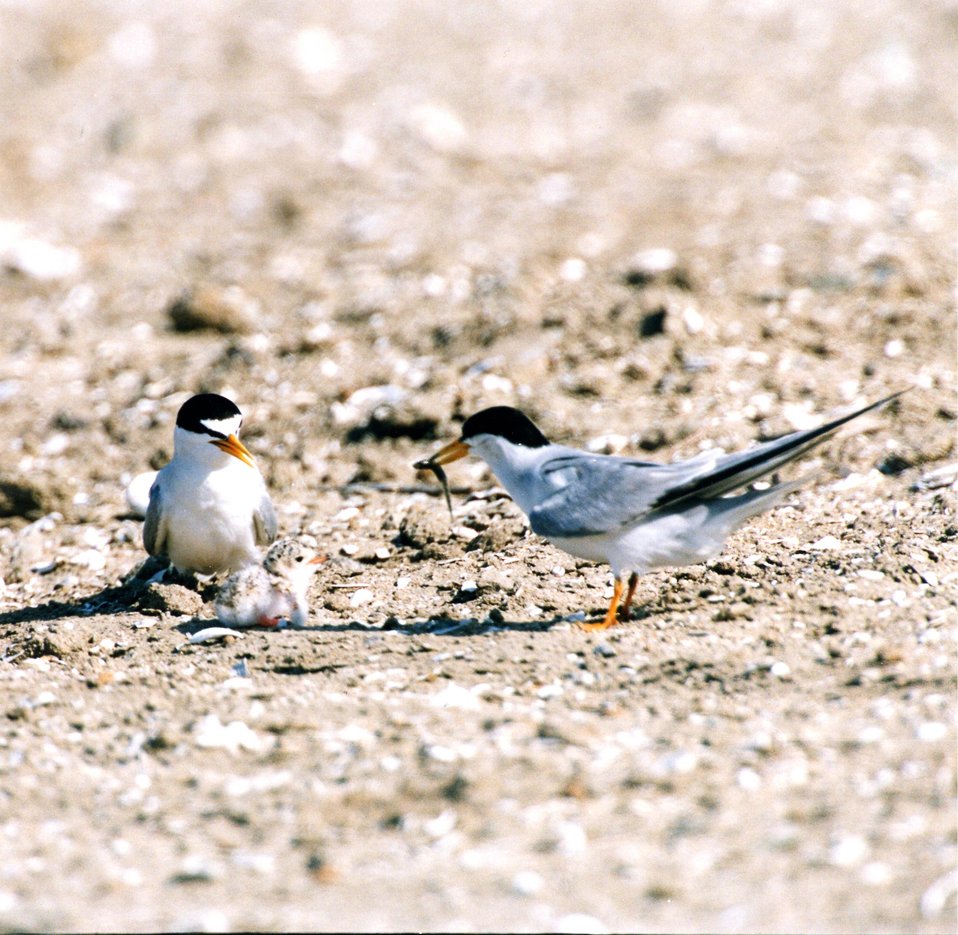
California Least tern pair feeding a banded chick